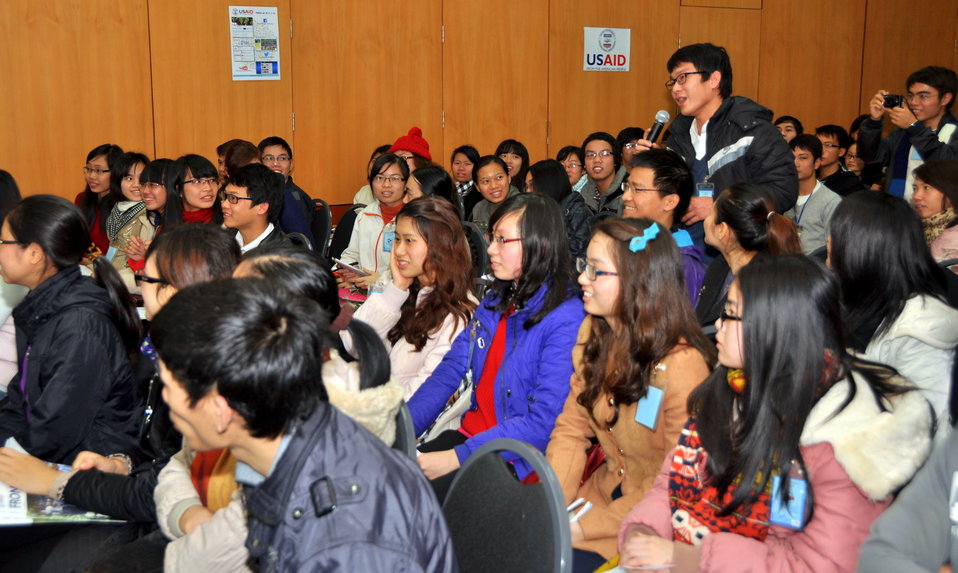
Speaker program on Climate Change and Clean Energy at the American Center

Hanoi, January 16, 2013